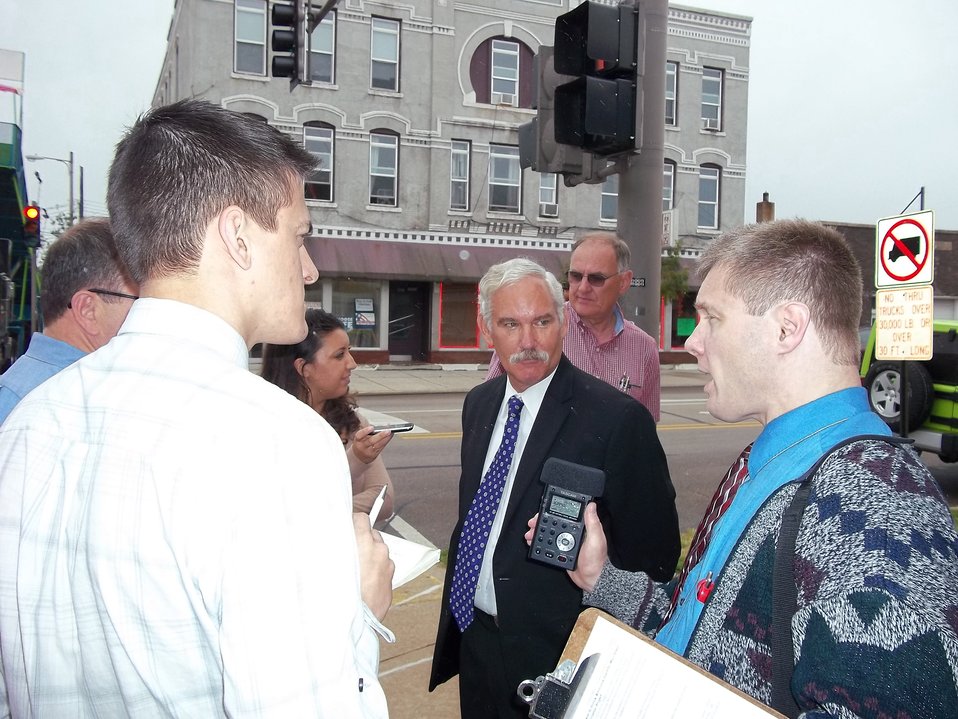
Scuse in Ottawa

Agriculture Acting Deputy Secretary Michael Scuse (center) talks to reporters after announcing a U.S. Department of Agriculture (USDA) grant funding to help Ottawa, IL refurbish its downtown. Acting Deputy Scuse said it is important to the future of rural America to get a comprehensive Food, Farm and Jobs Bill passed as soon as possible.